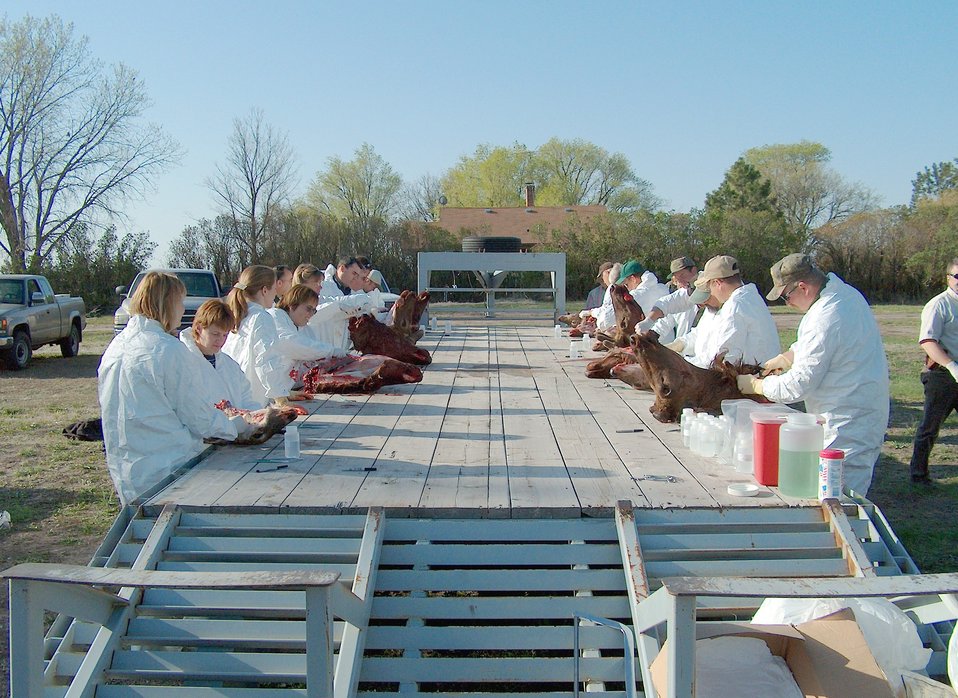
CWD training

Staff at Fort Niobrara National Wildlife Refuge learn CWD sampling techniques during a training session conducted by the Wildlife Health Office. We periodically offer trainings throughout the region to refresh skills and keep staff up to date on current techniques.